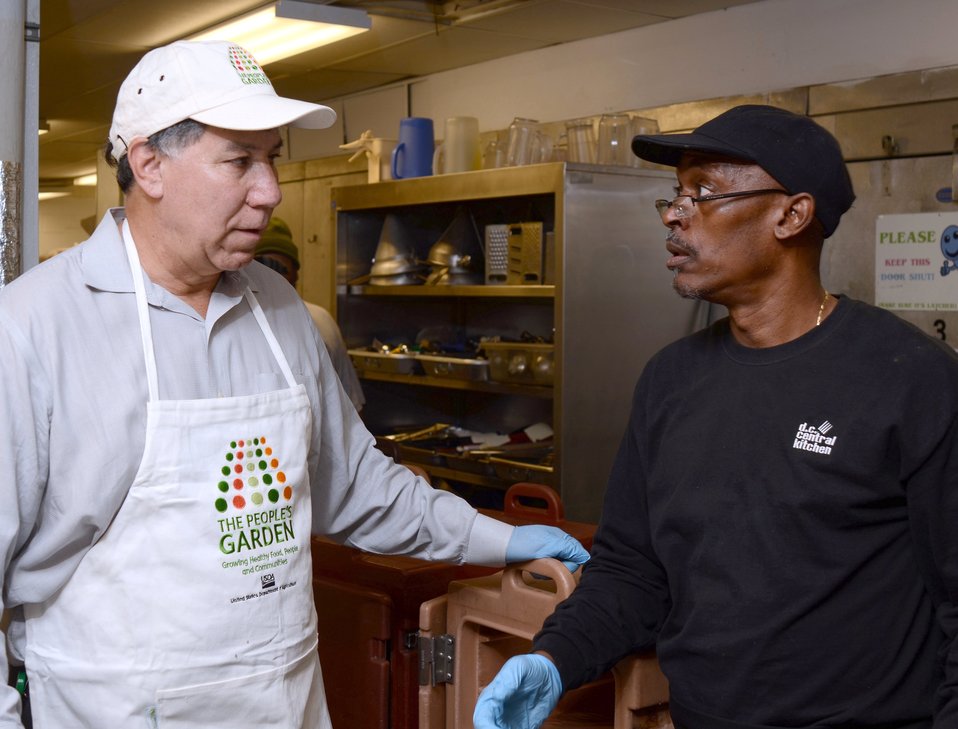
From left: Ed Avalos, Under Secretary for Marketing and Regulatory Programs and Gregory Jones, D.C. Central Kitchen employee take a break from preparing the evening meal at the D.C. Central Kitchen during USDA’s National Service Day on January 12, 2012. NSD honors Dr. Martin Luther Kings’s contributions to the Civil Rights Movement. The D.C. Central Kitchen turns leftover food into millions of meals for thousands of at-risk individuals while offering nationally recognized culinary job training to once homeless and hungry adults.